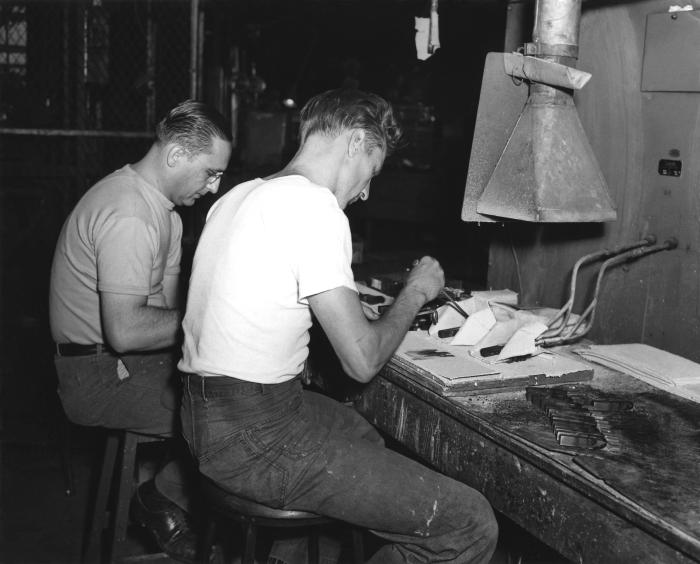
This historical photograph was provided by the Center for Disease Control's (CDC), National Institute for Occupational Safety and Health (NIOSH). It depicted two factory workers at a Carboloy� plant, who were working with heated metals at their workstation. The immediate area was being ventilated in order to extract noxious fumes that were the biproducts of the metallurgic process. Though the air was being cleansed, the workers were not wearing filtered breathing masks, nor were they wearing gloves, or 'protective' goggles, though one man was wearing eyeglasses. Carboloy� is an alloy created by combining tungsten with cobalt or nickel and carbon. The alloy is extremely hard, harder than steel, and is used to cut steel, porcelain, quartz and other brittle materials. Water is often used to extract airborne particulates from workplace environments that are subsequently filtered from the water, which is then recirculated.